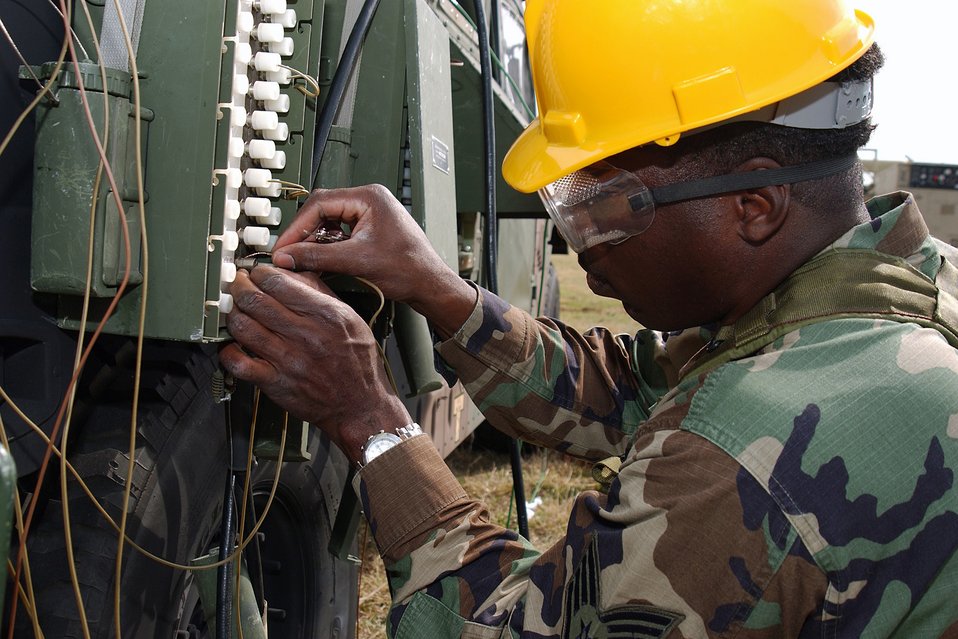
The set up

MCENTIRE AIR NATIONAL GUARD STATION, S.C. -- Staff Sgt. Ken Gowins helps assemble a mobile tower here April 1 during a field exercise. Sergeant Gowins is a member of the South Carolina Air National Guard's 245th Air Traffic Control Squadron.